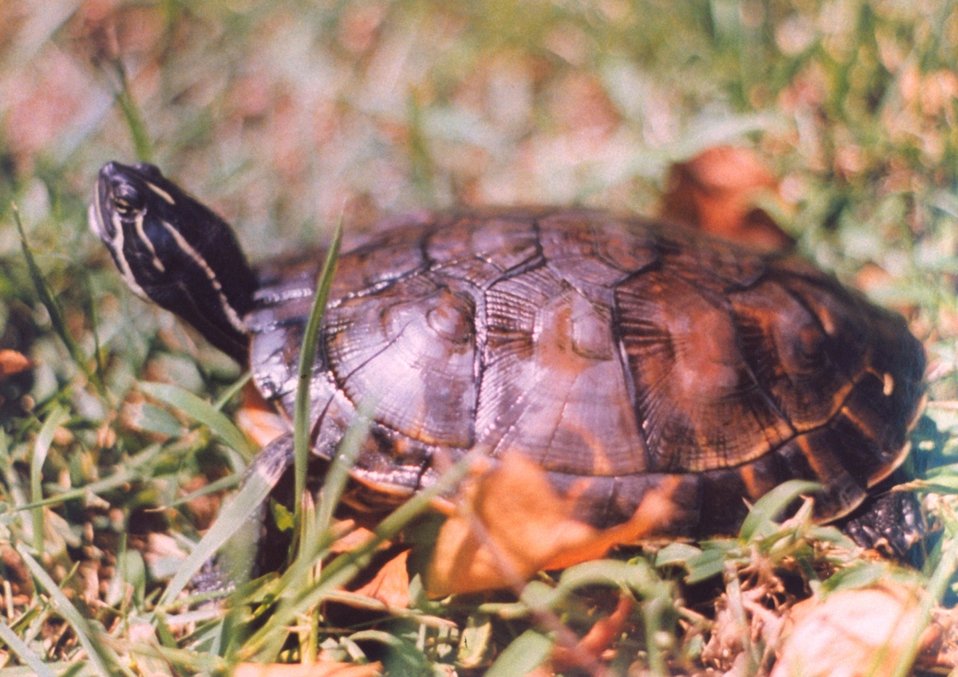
A 3-year old red-bellied slider turtle (Pseudemys rubriventris rubriventris.)